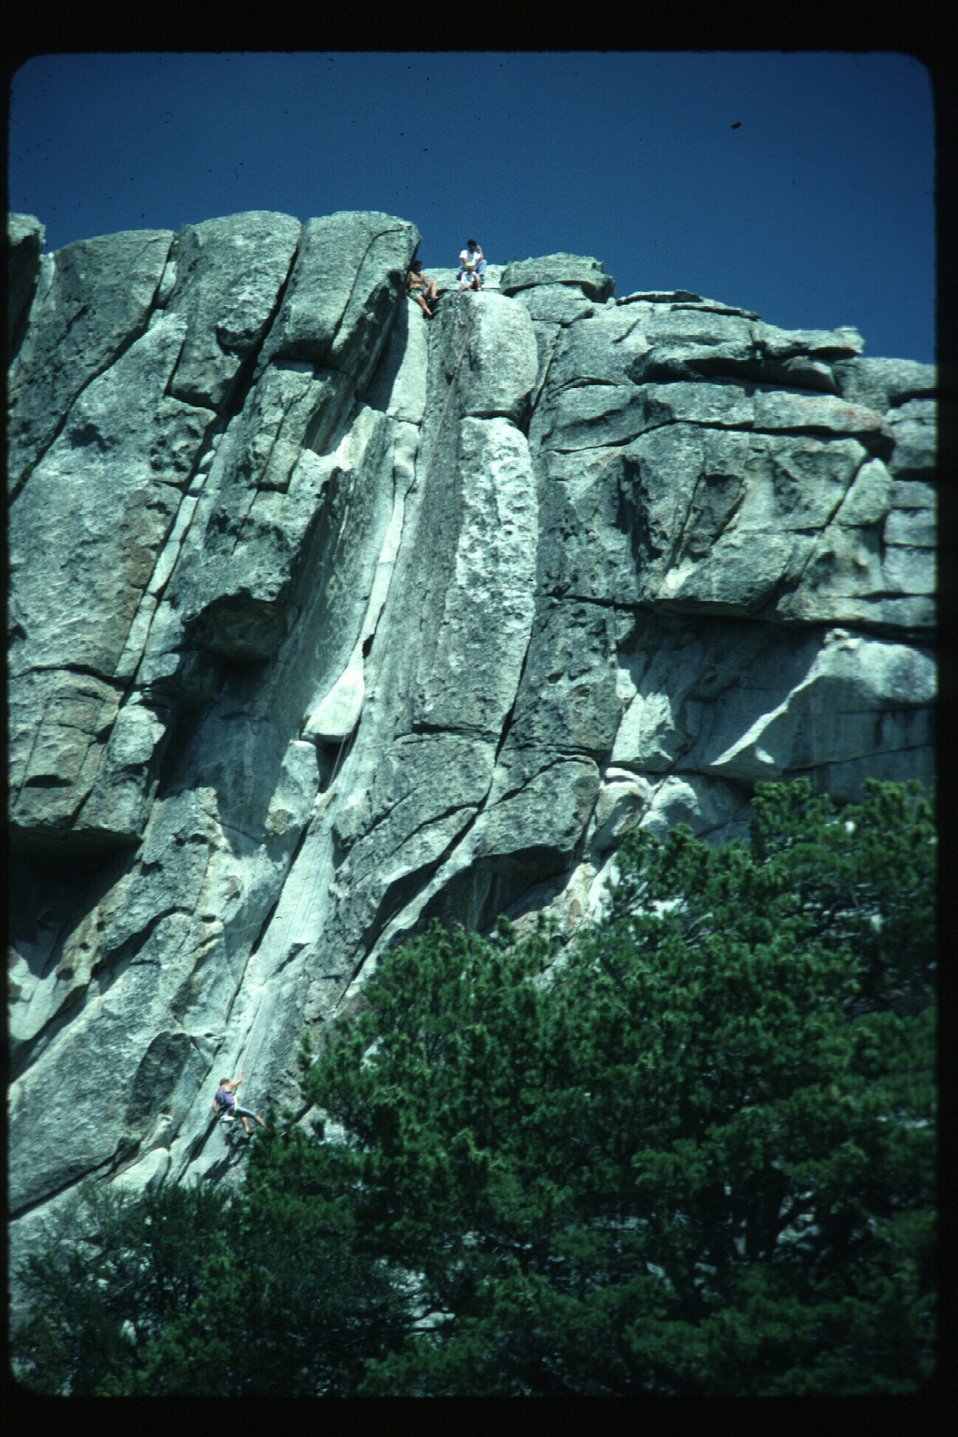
City of Rocks Rock Climbing Geology Burley Field Office USRD Upper Snake River District